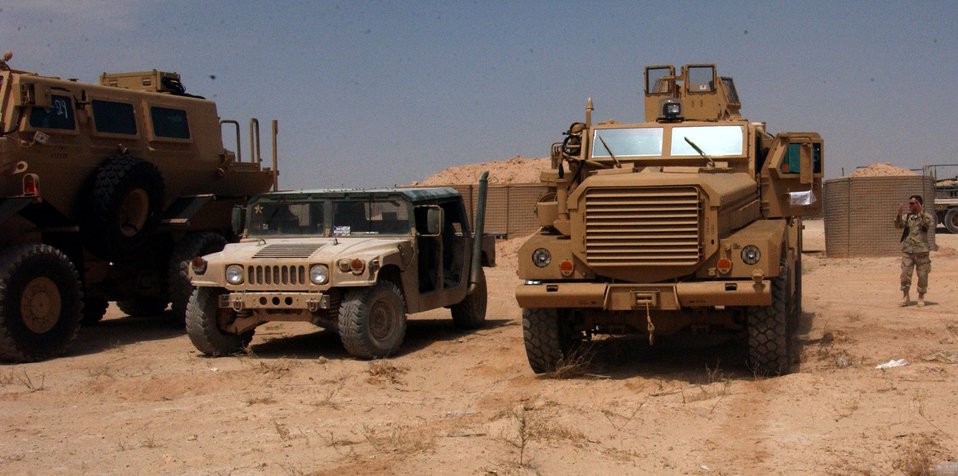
Deployed Airmen load, help deliver new 'Buffaloes'

Lt. Col. Gerard Couvillion observes as Tech. Sgt. Shawn Tague backs up a Mine Resistance Ambush Protected vehicle beside a High Mobility Multipurpose Wheeled Vehicle to show the difference between the vehicles Aug. 25 at Al Asad Air Base, Iraq. A MRAP Category III Buffalo model (far left) and MRAP Cougar (far right) will phase out the Humvee. MRAPs are designed to reduce servicemembers' casualties by protecting them from improvised explosive devices, increase their mobility and enhance mission success throughout the areas of responsibility. Sergeant Tague is assigned to the 438th Aerial Port Flight and is deployed from Pope Air Force Base, N.C. Colonel Couvillion is the 438th Expeditionary Support Squadron commander.